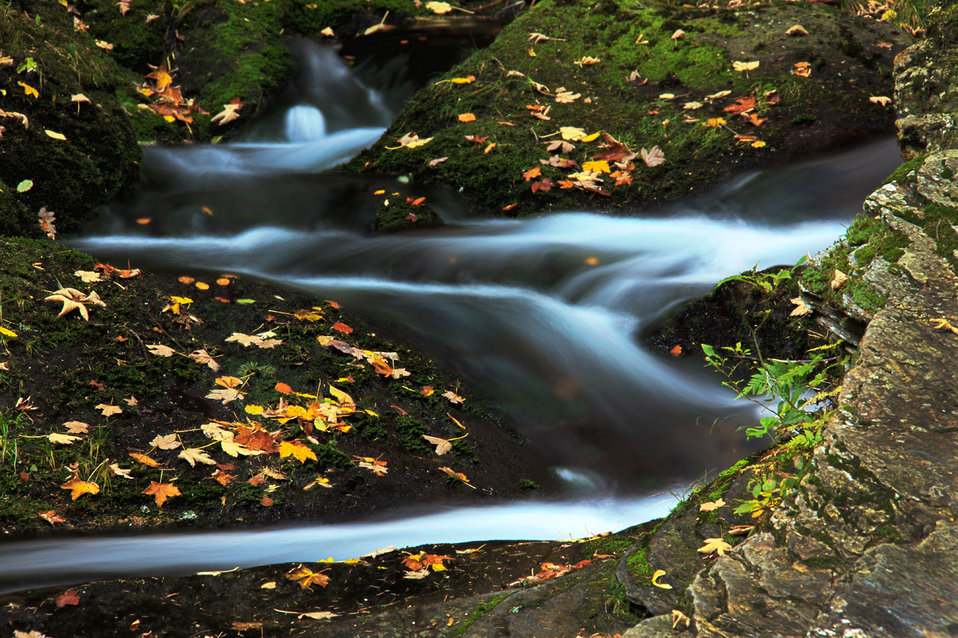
Mountain stream in autumn

Mountain stream in motion in bila opava walk in autumn.